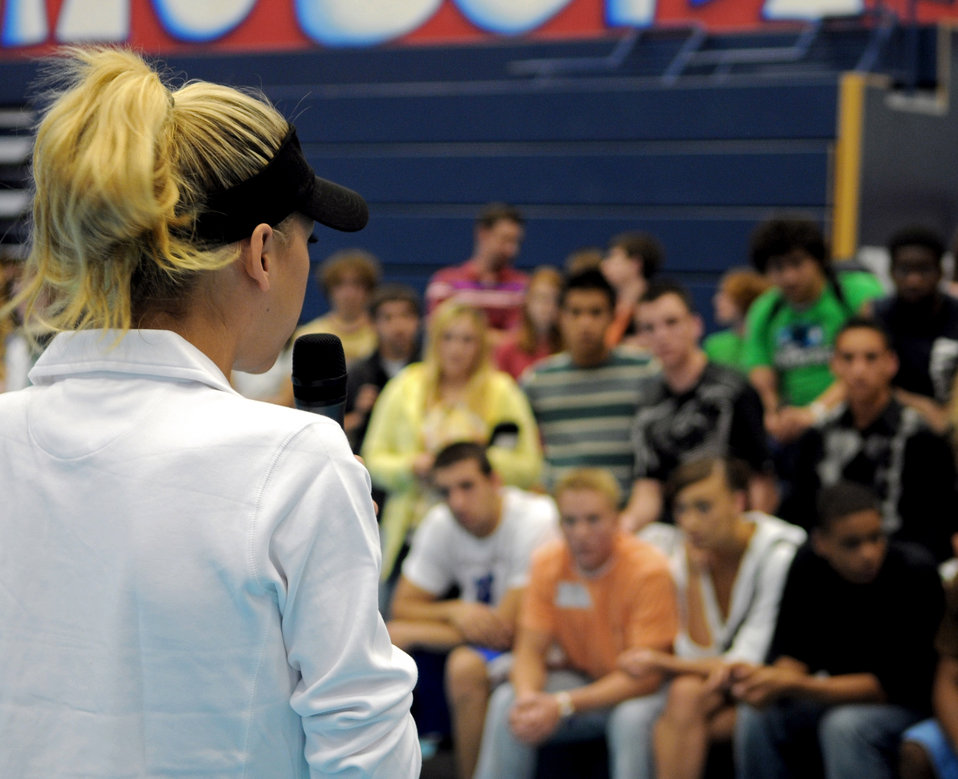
Anna Kournikova visits Ramstein students

Anna Kournikova talks to Ramstein High School students May 19 at Ramstein Air Base, Germany. She talked to them about school, her tennis career and working hard. Ms. Kournikova, a former professional tennis player, visited with students as part of a six-day educational United Service Organizations tour.